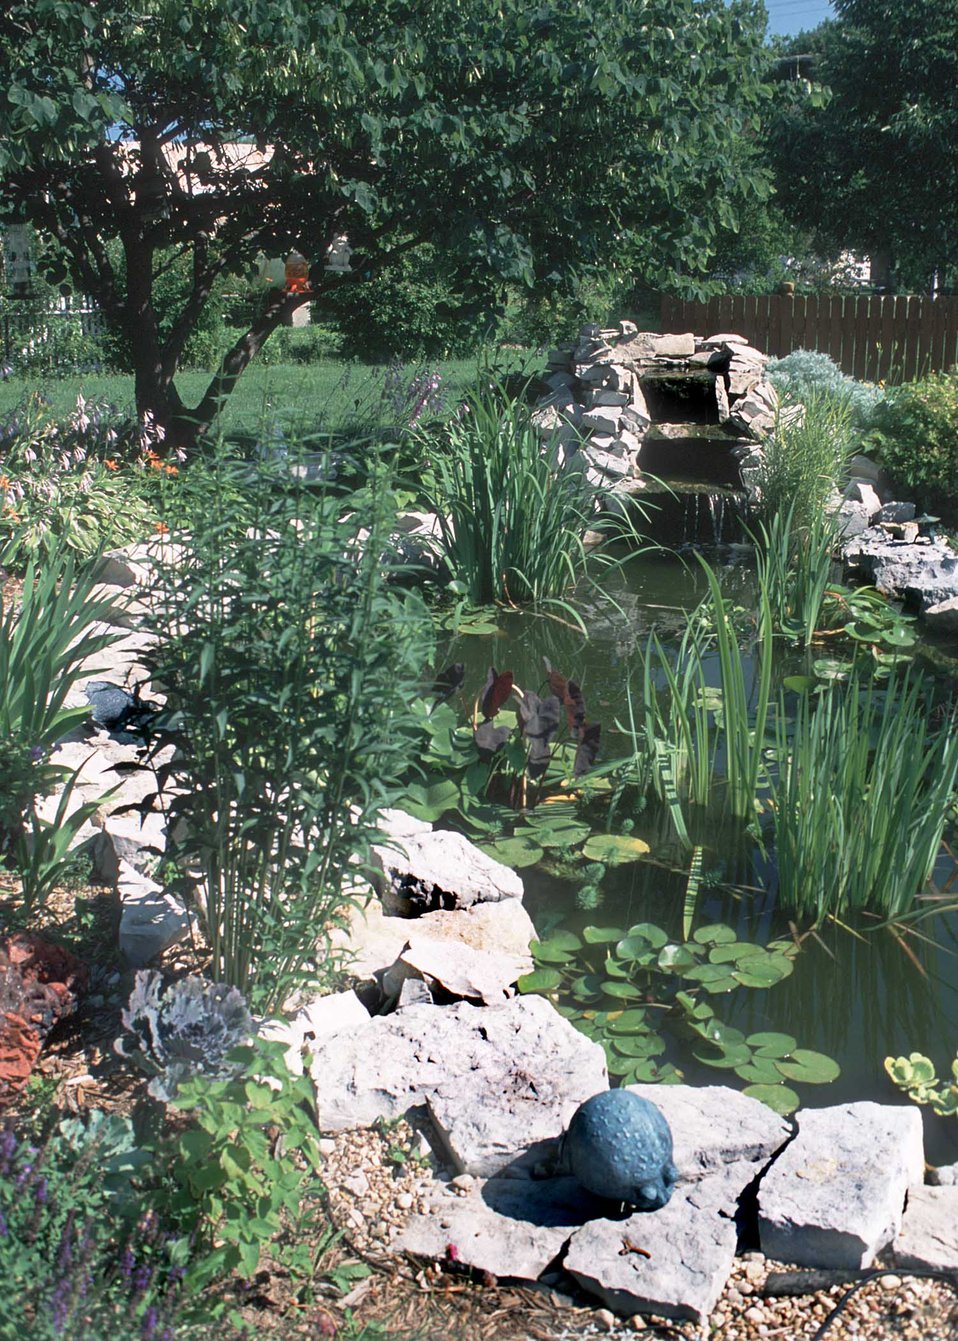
A variety of plants and a pond with circulating water are featured in a backyard in Keosauqua, Iowa.